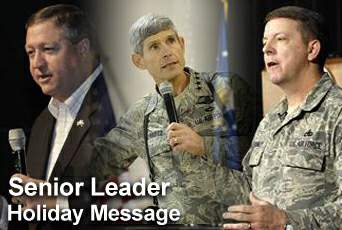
Air Force leaders send holiday message

Secretary of the Air Force Michael B. Donley, Air Force Chief of Staff Norton A. Schwartz and Chief Master Sgt. of the Air Force Rodney J. McKinley send out holiday greetings to Airmen and their families.